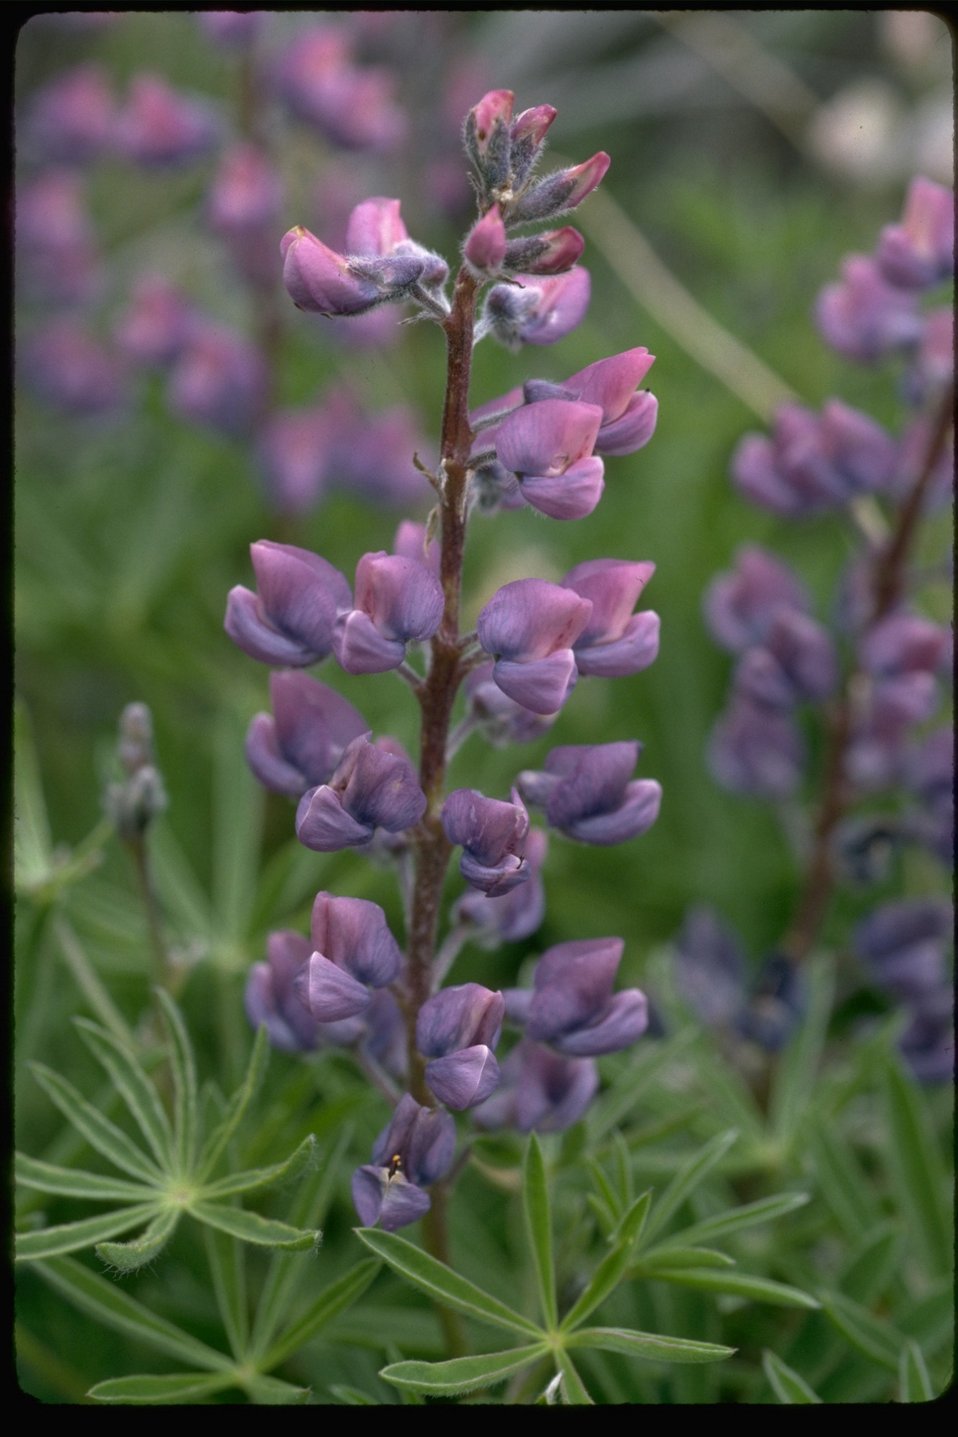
Multi-colored lupine found on the eastside of Steens Mountain. Lupinus laxiflorus is the botanical name.